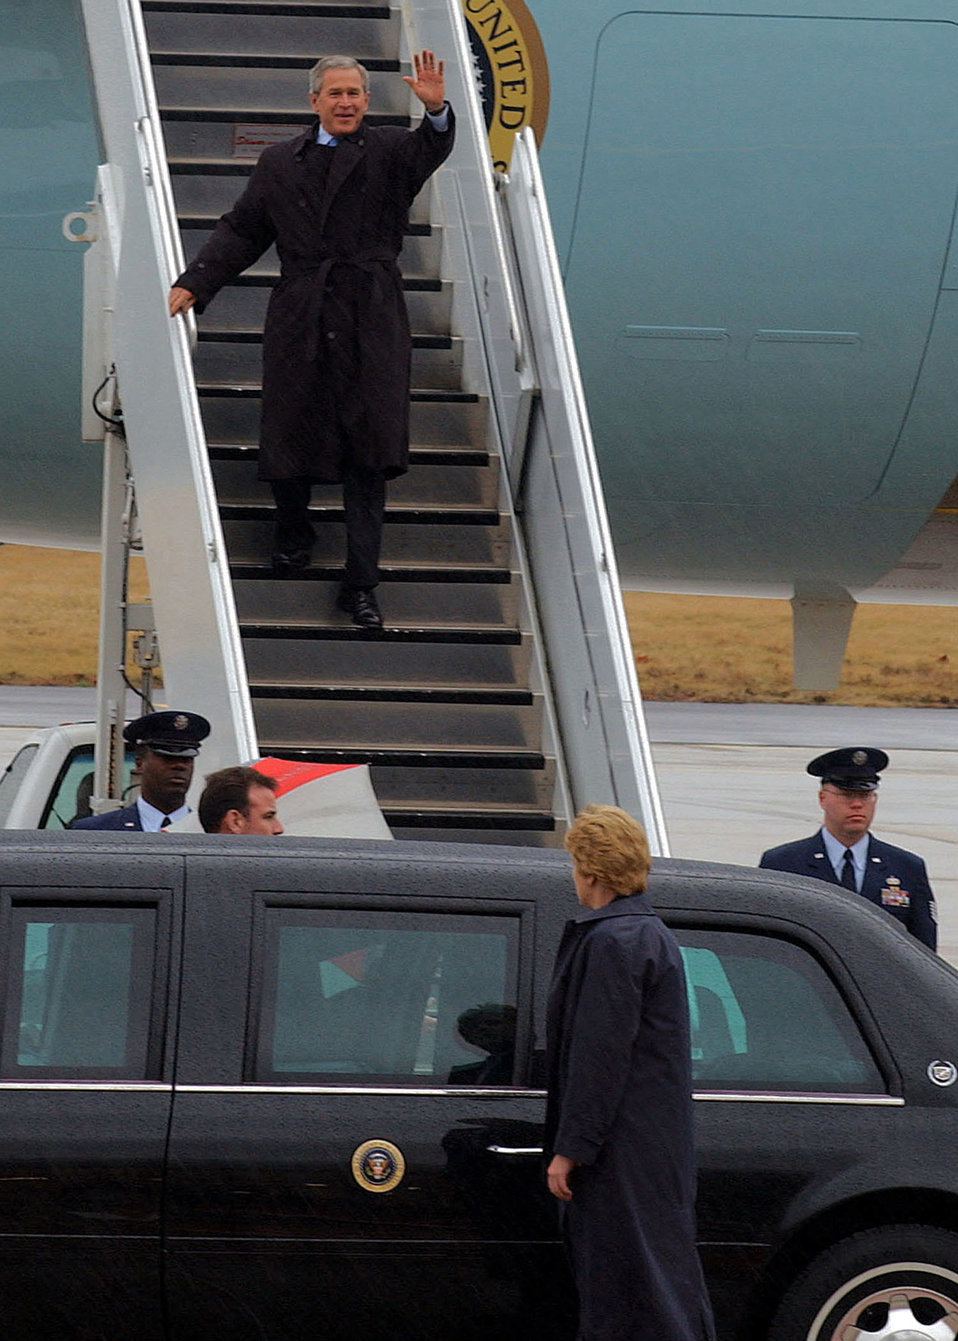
Hail to the Chief

SCOTT AIR FORCE BASE, Ill. -- President George W. Bush arrives here before traveling to the Collinsville, Ill., Convention Center Jan. 5. At the center, President Bush discussed placing monetary limitations on awards given in malpractice cases.